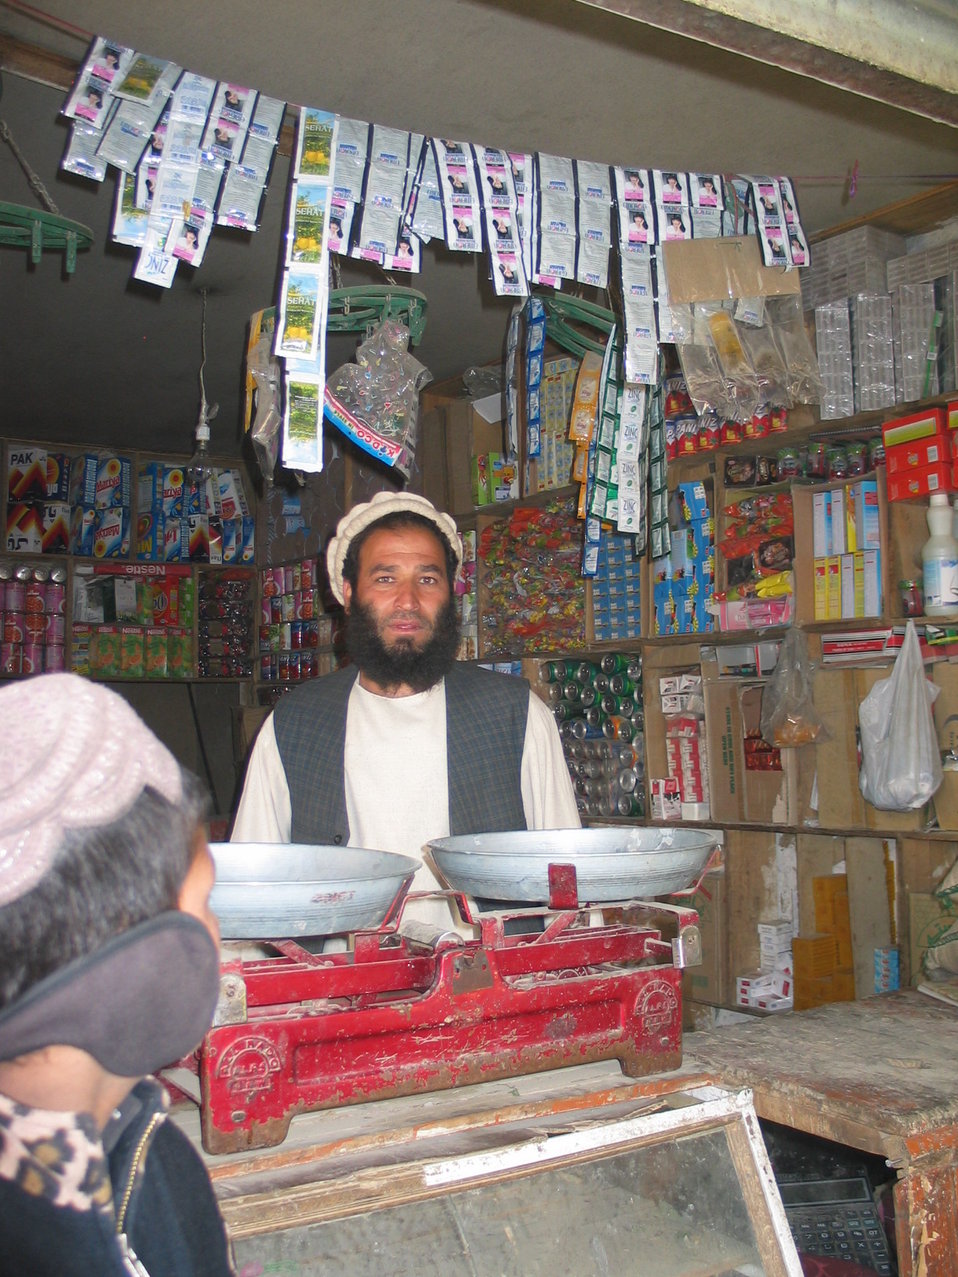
Kabul River Bridge Renovation, December 3, 2010